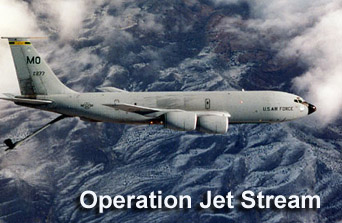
Operation Jet Stream

On April 7, 1958, Brig. Gen. William E. Eubank flew a KC-135 Stratotanker on the first around-the world jet flight during